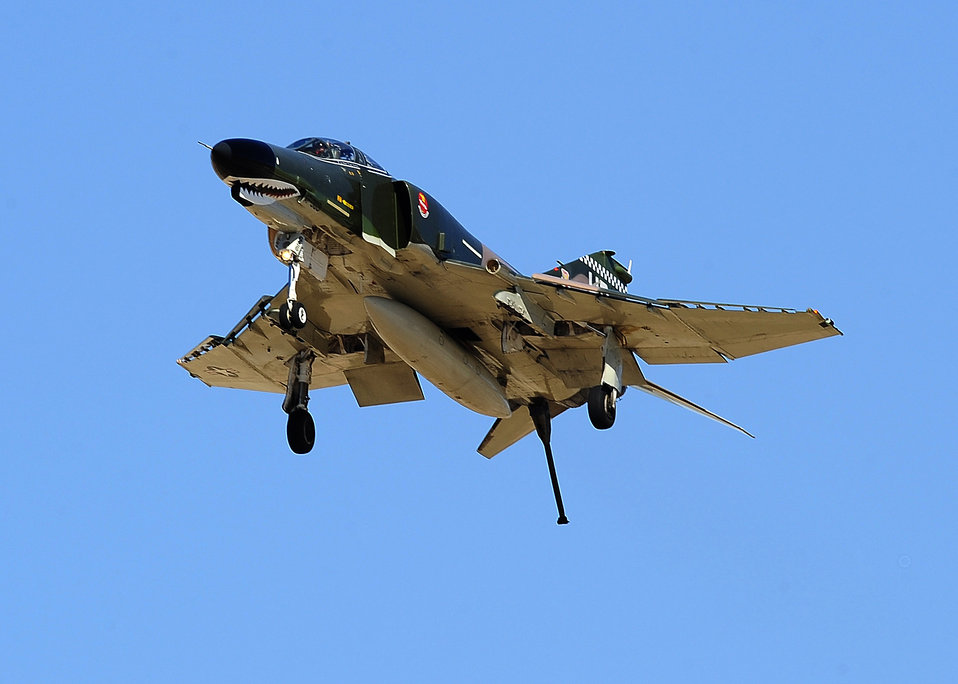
Target practice

An F-4 Phantom II practices Oct. 23, 2009, for the Southwest Open House at Holloman Air Force Base, N.M. The F-4 is assigned to the 82nd Aerial Targeting Squadron.